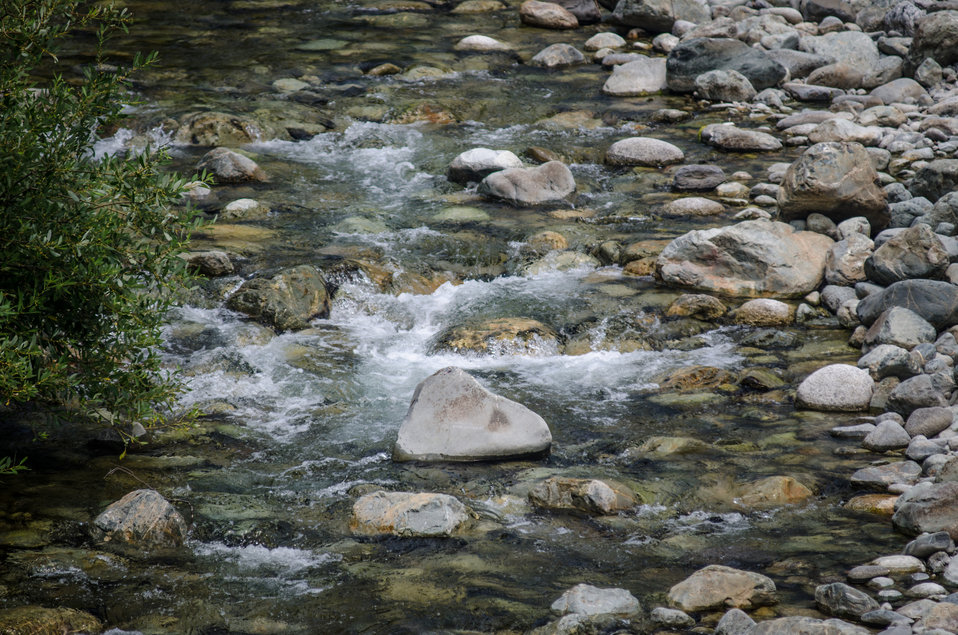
The clear waters of the North Fork Salmon River runs along the south side of Sawyers Bar (right), in Klamath National Forest, Calif., where the Salmon River Complex Wildlands Fire burns miles away to the northwest and west of Etna and Yreka, CA, on Tuesday, Aug. 6, 2013.